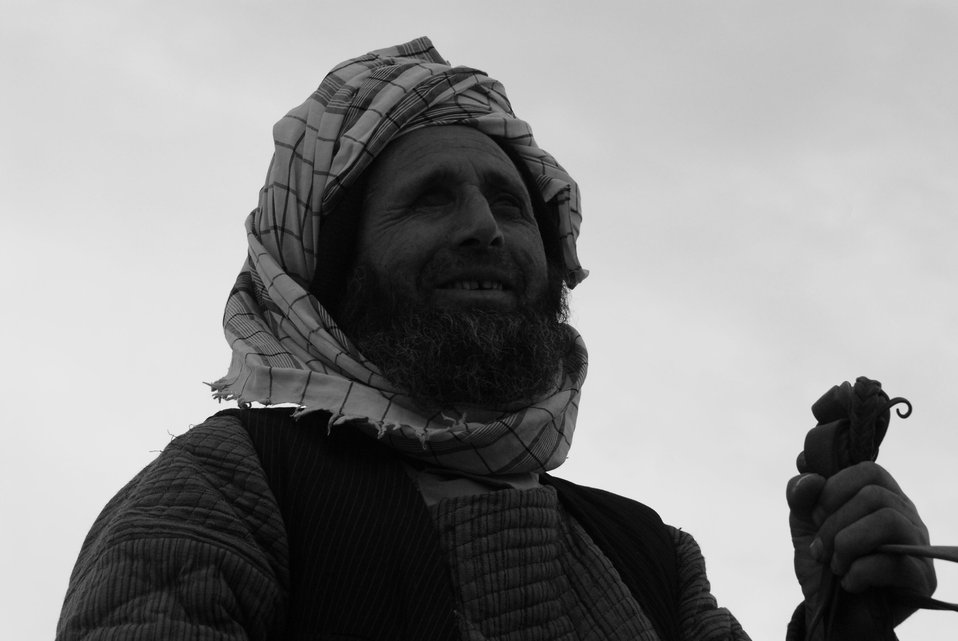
'On the Road' in Balkh Province